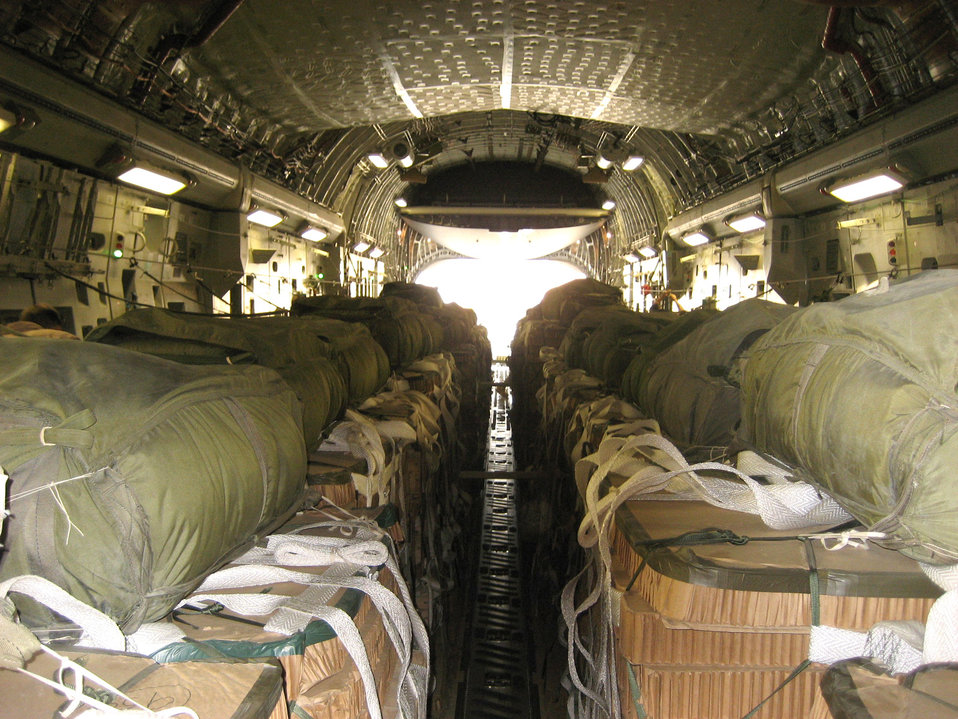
C-17 crew delivers vital supplies to Soldiers

A load of 50,000 pounds of ammunition waits in a C-17 Globemaster III at Manas Air Base, Kyrgyzstan, Aug. 23 before being airdropped to Soldiers in Afghanistan engaged in combat with anti-coalition forces.